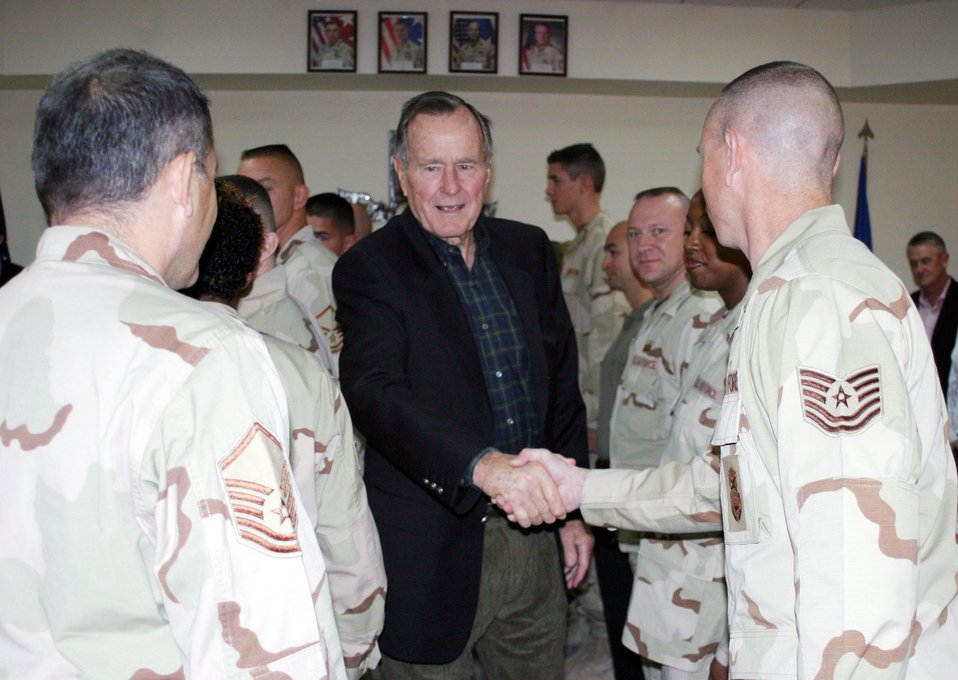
Former president visits deployed troops

SOUTHWEST ASIA (AFPN) -- Former President George H. W. Bush shakes hands with Airmen and Sailors during his recent visit here.